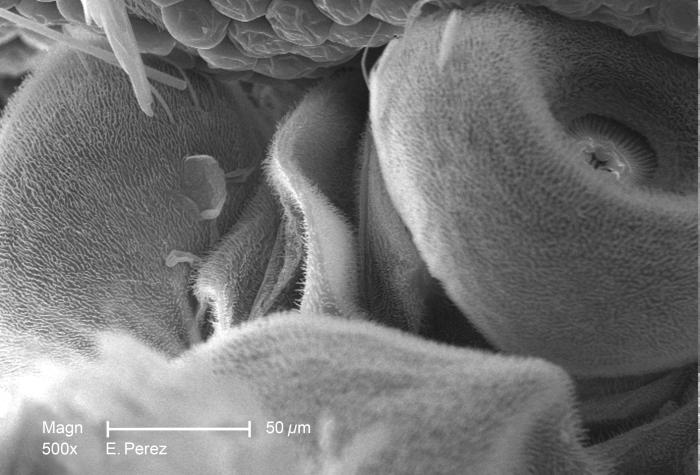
Magnified at 500X, this scanning electron micrograph revealed some of the exoskeletal ultrastructural morphology located on the head, or cephalic region of an unidentified mosquito found deceased in the suburbs of Decatur, Georgia. Note the two bilaterally situated 'scapes', which act as the first antennal segments, that may be seen in greater detail in PHIL 10553, 10554, and 10555. The right compound eye is evident at the top of the image, and appears to be constructed from shriveled grapes, which are actually ommatidia that were deformed in the specimen fixation process.